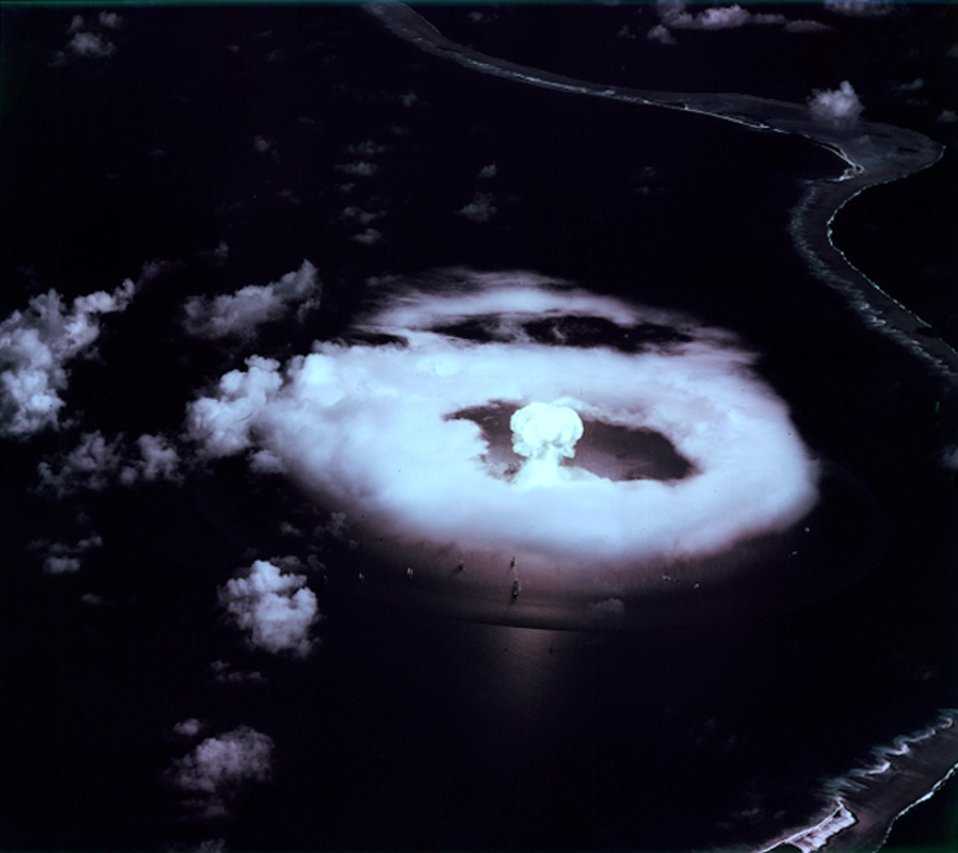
'A-Day' First atomic bomb explosion at Bikini in the Marshall Islands 1 July 1946.